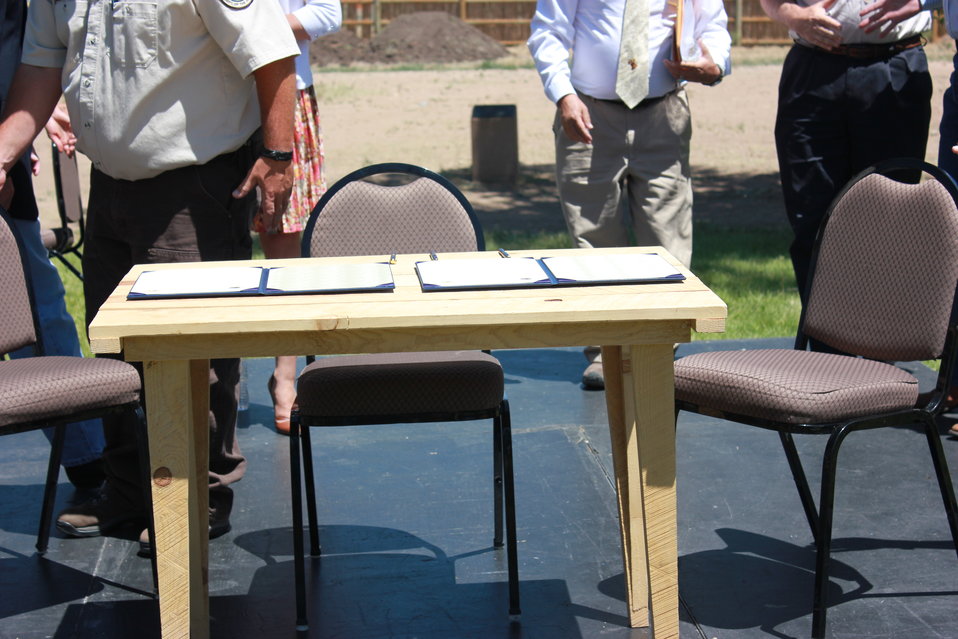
Historic Conservation Easement in Sangre de Cristo Mountains